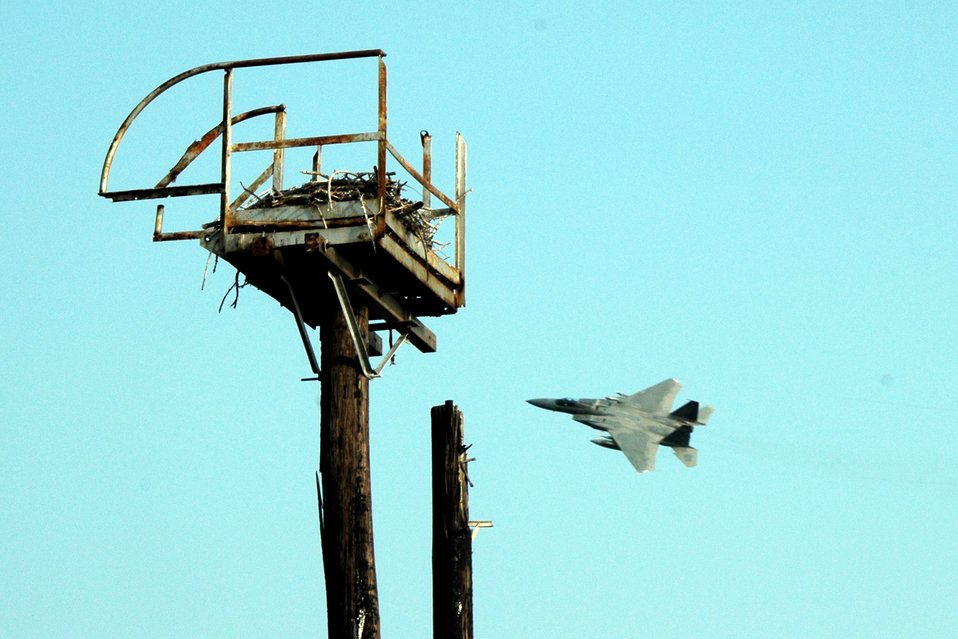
Air Force, Navy join forces for combat training

An F-15 Eagle flies by an eagle nest at Naval Air Station Key West, Fla. The 60th Fighter Squadron from Eglin Air Force Base, Fla., deployed 16 F-15s and more than 200 Airmen June 15 for two weeks of dissimilar air combat training as an exercise in joint training operations with the Navy.